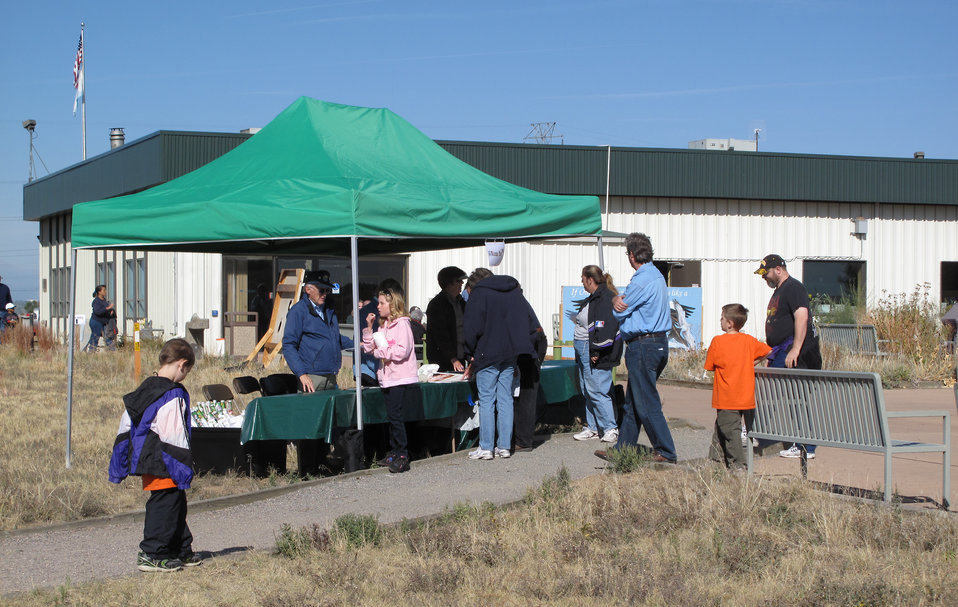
Refuge Round-up 2010

This booth provided posters and information on the Rocky Mountain Arsenal National Wildlife Refuge and the activities that were going on that day.